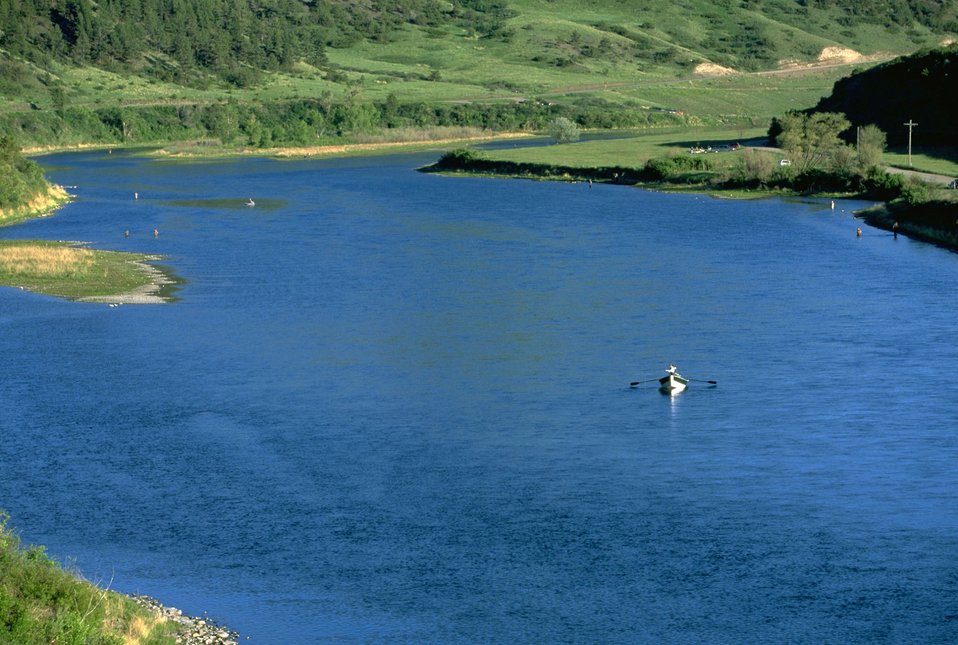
Fishermen on the Missouri River